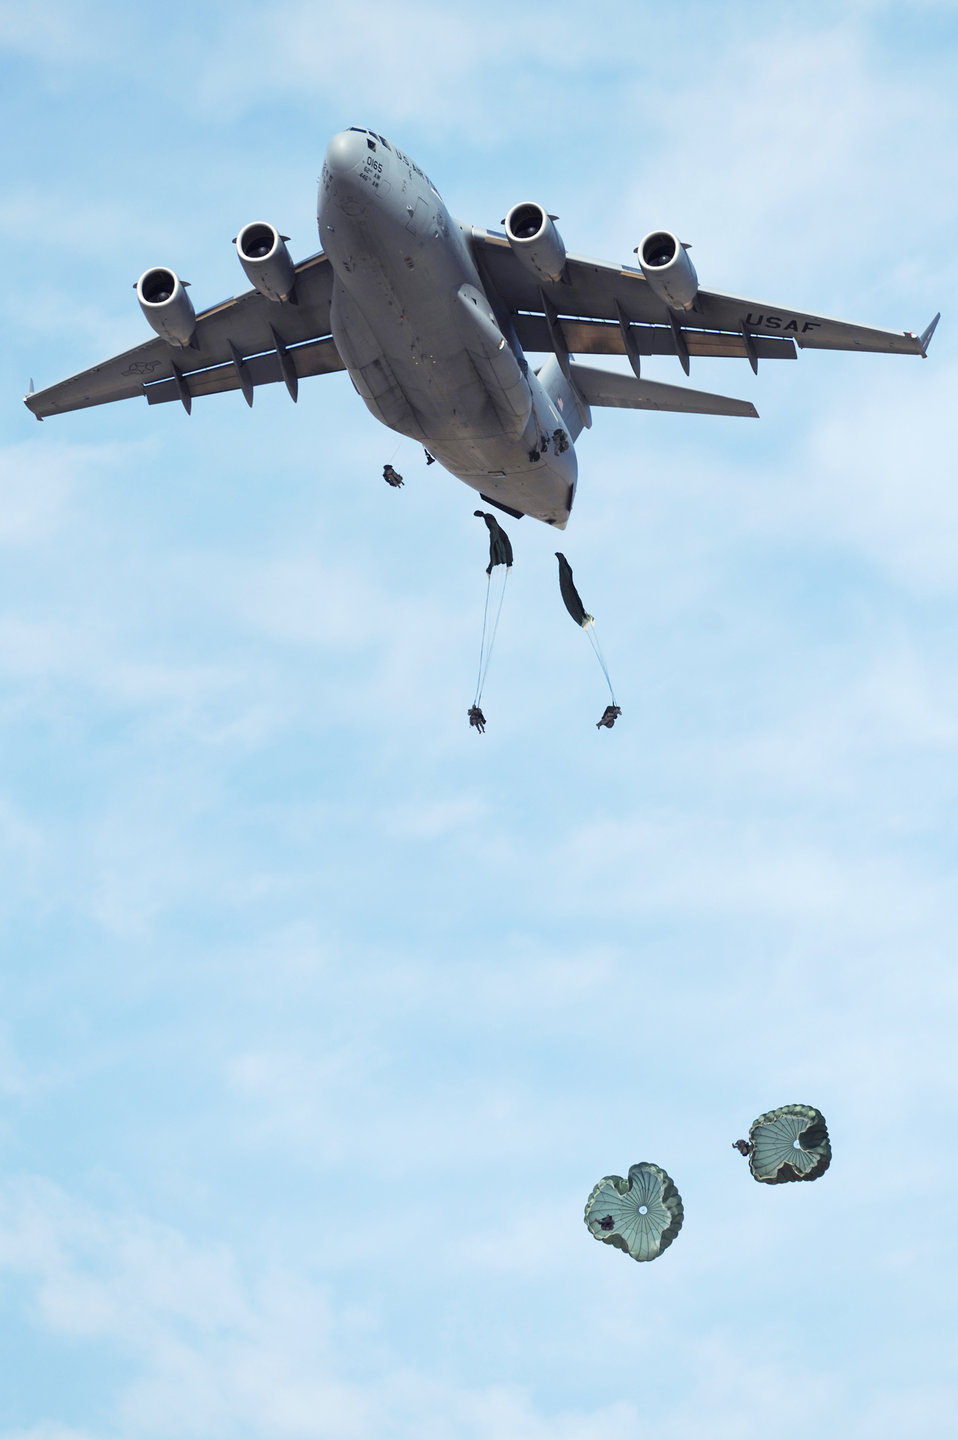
Airdrop training

From a C-17 Globemaster III, Soldiers from the 173rd Calvary Airborne Reconnaissance Squadron at Fort Bragg, N.C., jump into the urban operations complex during a Mobility Air Forces Exercise, Nov. 18, 2009, at the Nevada Test and Training Range near Nellis Air Force Base. In addition to providing airdrop training, the exercise also allows Soldiers the opportunity to use range facilities to conduct urban ground operations training.